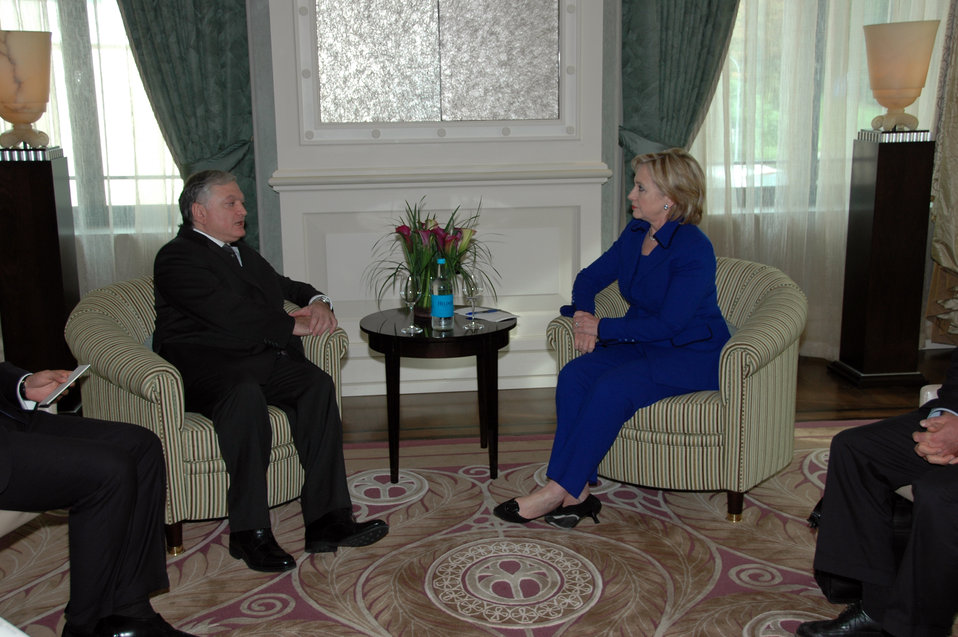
Secretary Clinton Meets With Armenian Foreign Minister

U.S. Secretary of State Hillary Rodham Clinton with Armenian Foreign Minister Edouard Nalbandian in Zurich, Switzerland October 9, 2009.